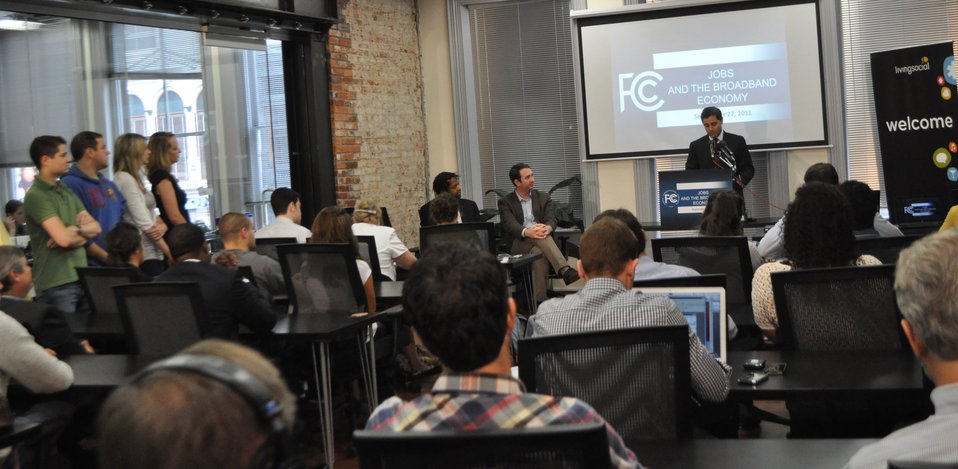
Jobs and the Broadband Economy

FCC Chairman Genachowski